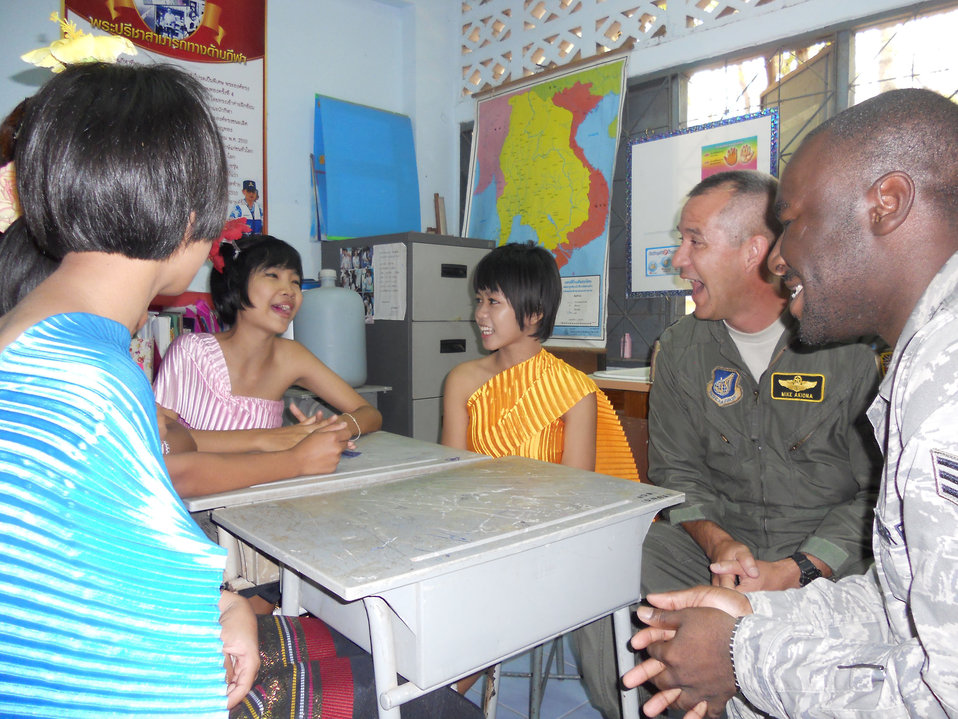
Cope Tiger 2011

Lt. Col. Mike Akiowa and Senior Airman Antonio Savage hone their Thai pronunciation skills March 14, 2011, with students from the Ang Huay Yang School in Korat, Thailand. The Airmen visited the school with members of the Royal Thai and Republic of Singapore air forces during Cope Tiger 2011, an annual, multilateral, joint field training exercise being conducted in Thailand March 14 through 25. Colonel Akiowa is a pilot assigned to the 203rd Air Refueling Squadron at Joint Base Pearl Harbor-Hickam, Hawaii. Airman Savage is assigned to the 44th Fighter Squadron at Kadena Air Base, Japan.